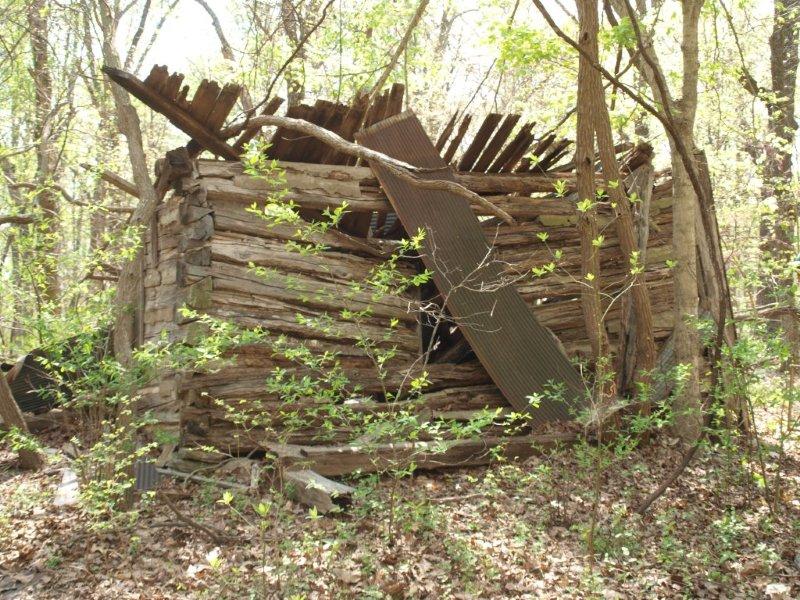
The remains of a half-dovetail log cabin found by Passport-in-Time volunteers and U.S. Department of Agriculture Forest Service archaeologists during a survey project on June 4, 2012. The cabin appears to have been constructed during the mid-nineteenth century. It was possibly the home of a worker at the nearby Illinois Iron Furnace and this land is now included in the Kaskaskia Experimental Forest.